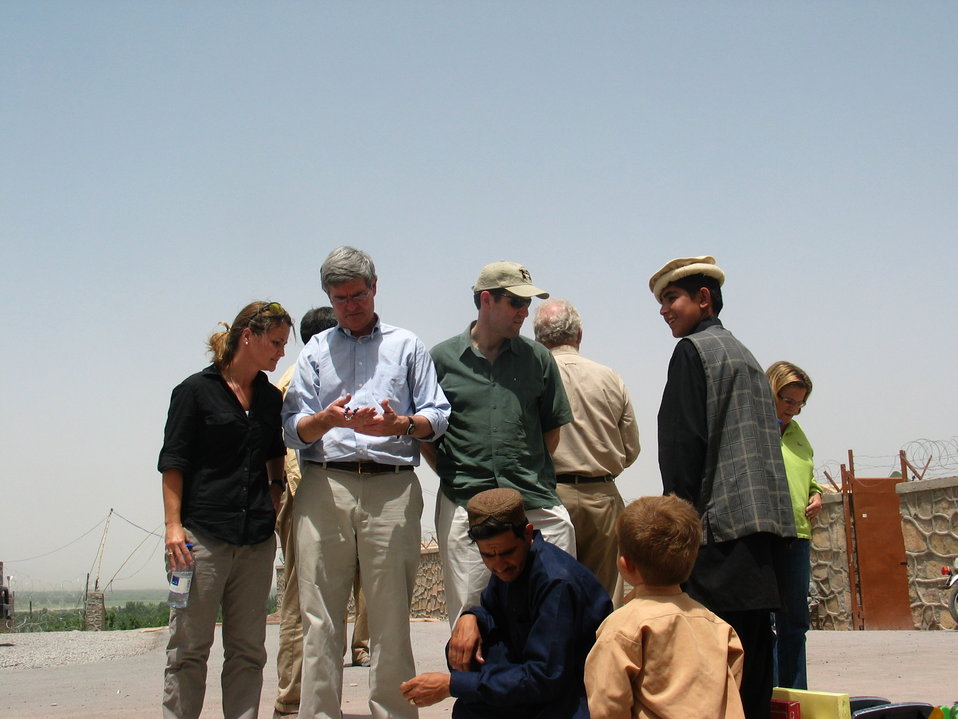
CODEL Berman